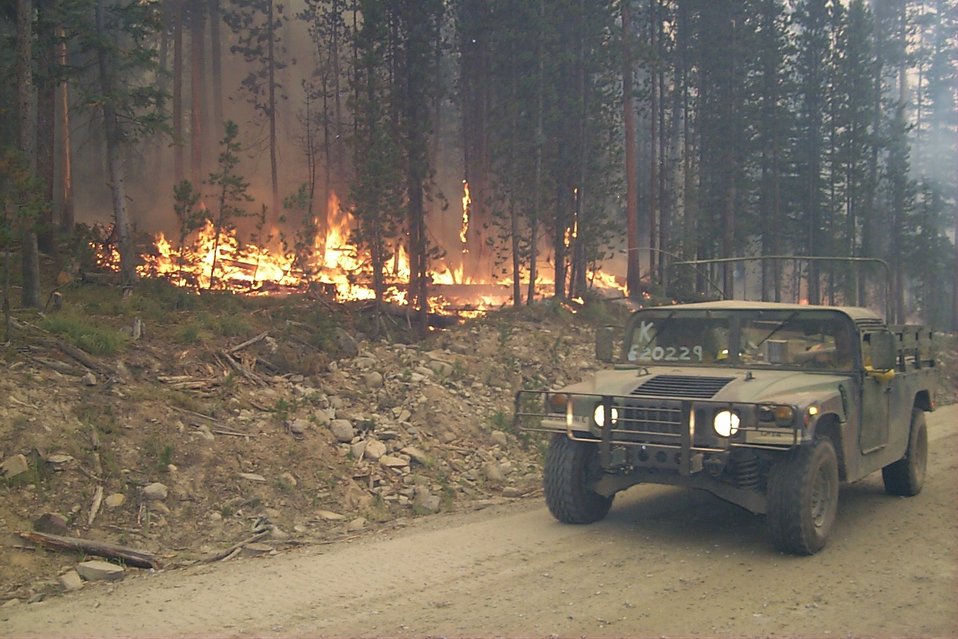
Humvee near fire Fire Clearwater Fire Salmon Field Office USRD Upper Snake River District